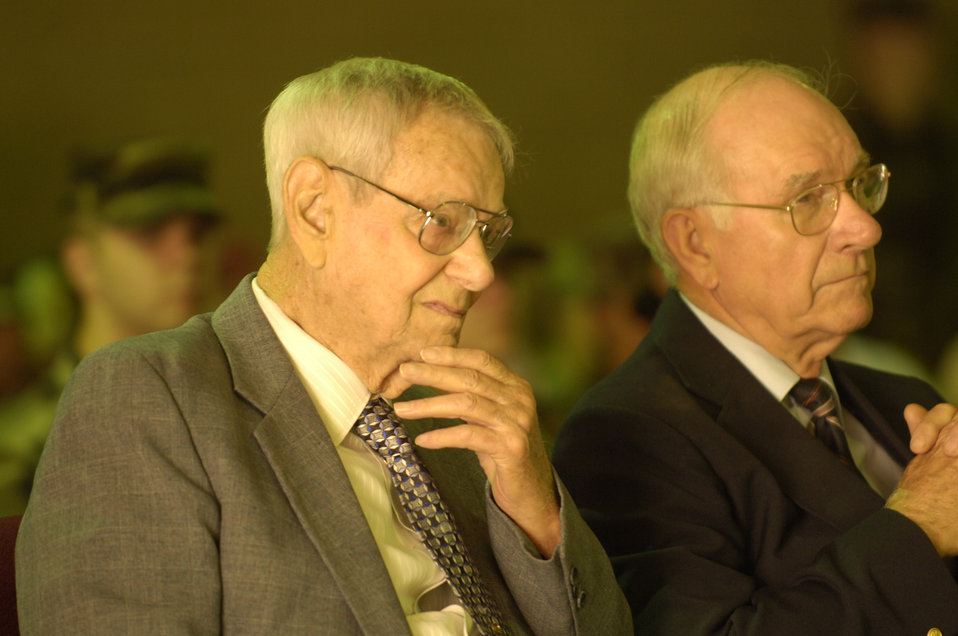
Lackland honors nine enlisted heroes

Former Chief Master Sergeants of the Air Force Paul W. Airey and Sam Parish listen to opening remarks at a ceremony dedicating the former 319th Processing Center in Chief Airey's honor at Lackland Air Force Base, Texas, on Wednesday, June 14. The building was one of nine training facilities dedicated to nine enlisted Air Force heroes who have served from World War II to present-day operations in the war on terrorism. The ceremony was part of a three-day event to honor the 60th anniversary of basic military training.